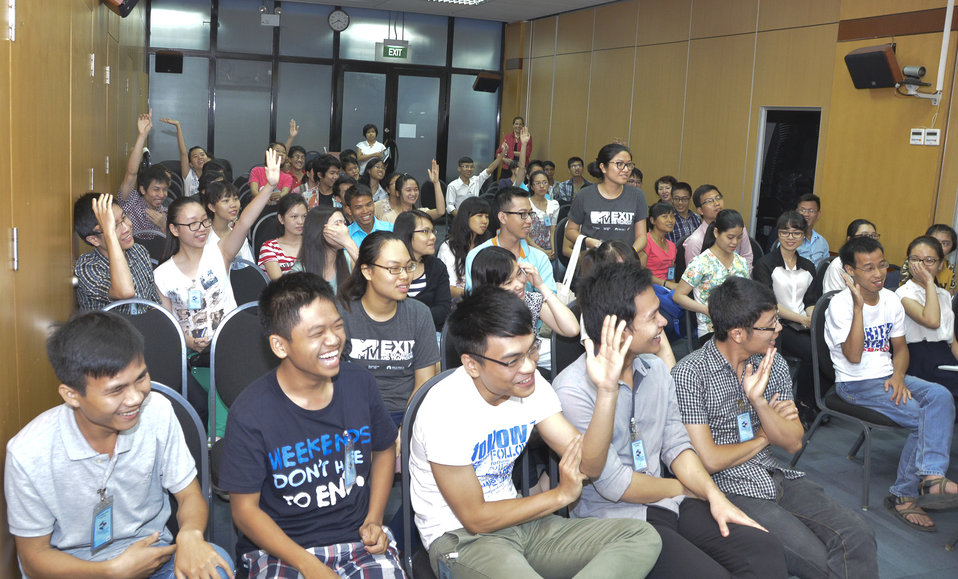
MTV Exit Talk to Engage Students in the Fight against Human Trafficking

Hanoi. June 5, 2014.